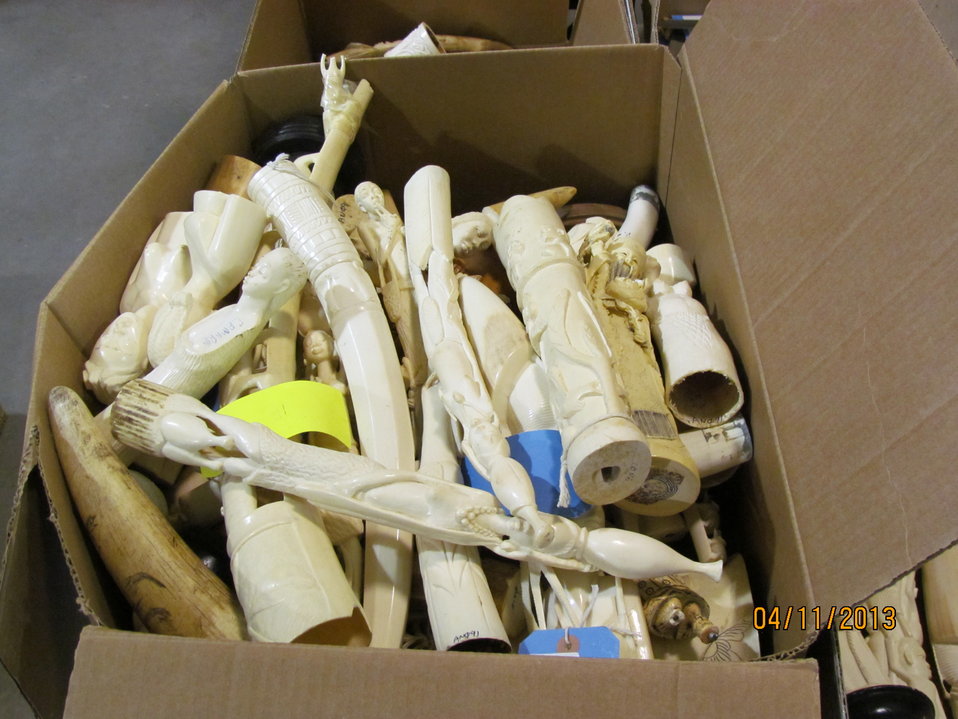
Boxed carvings and small tusks